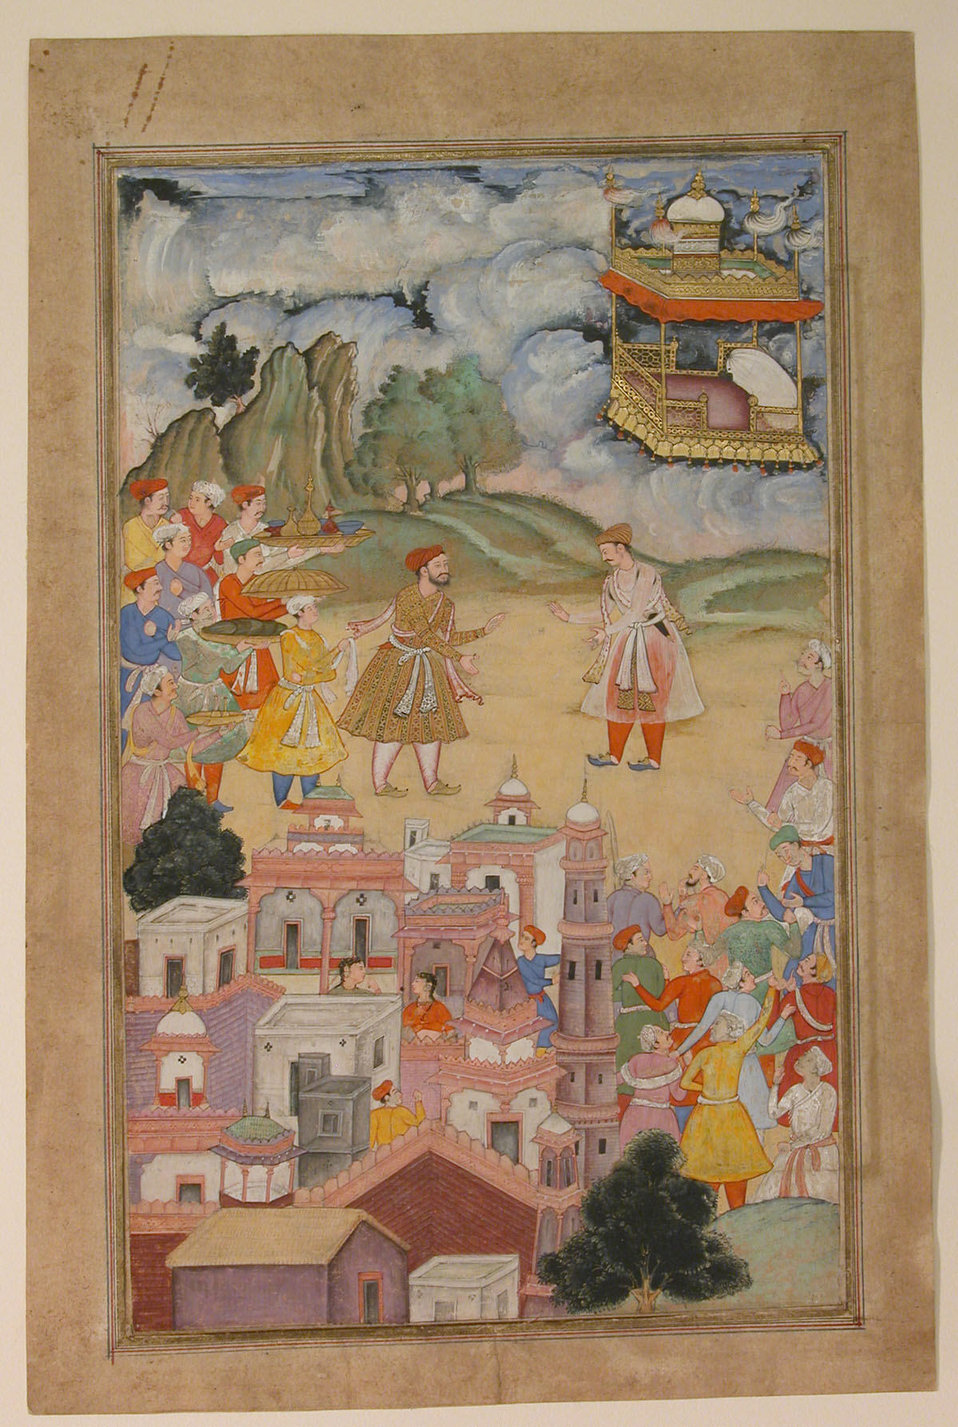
'King Sal Visits Kala Yavana', Folio from a Harivamsa (Legend of Hari (Krishna))